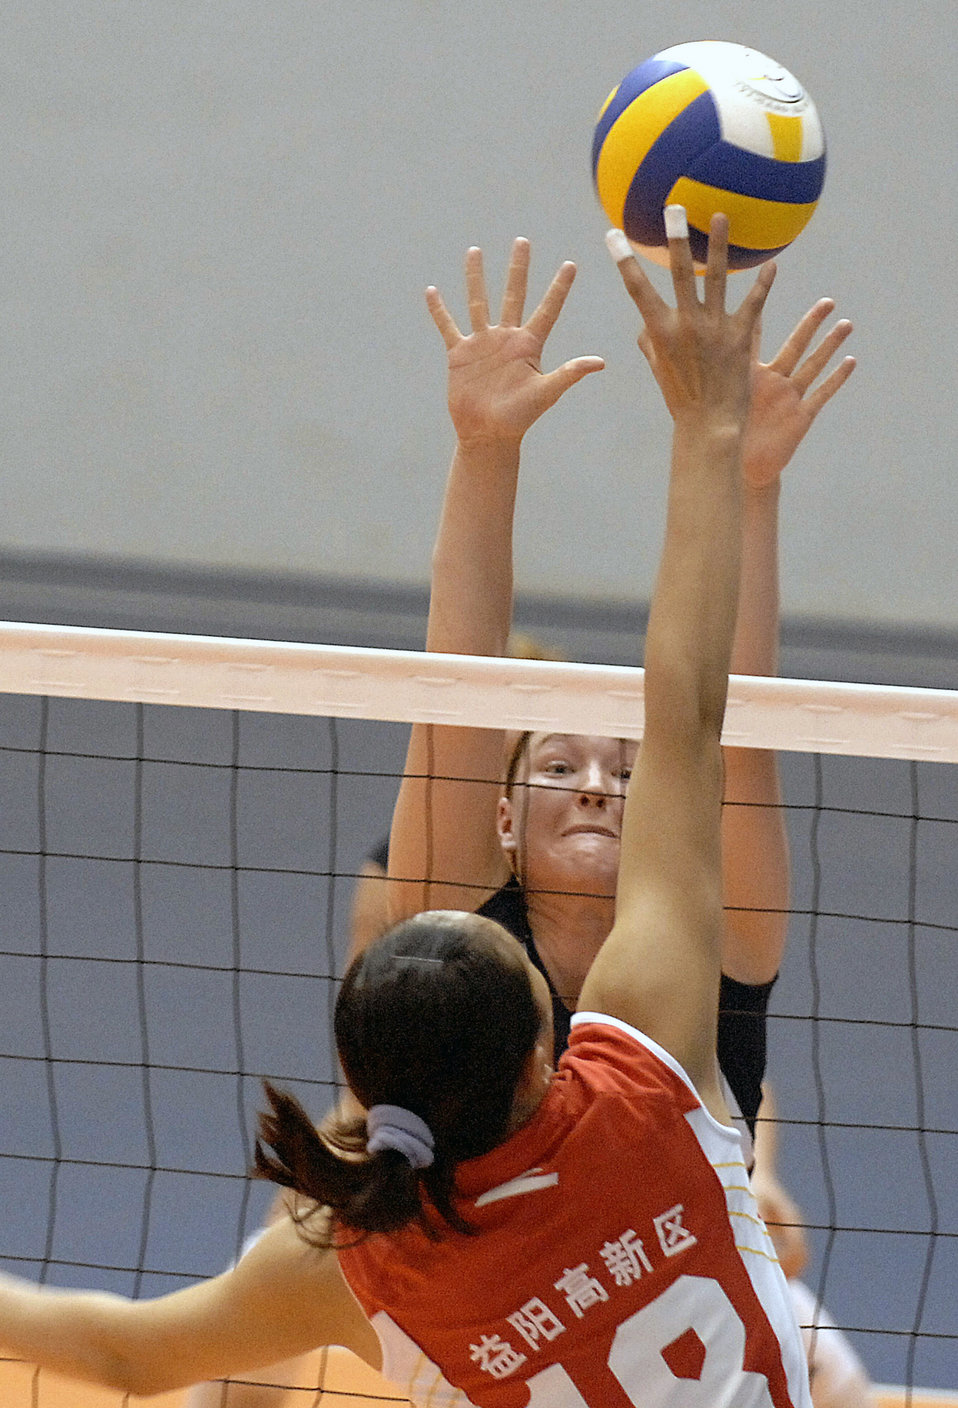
4th CISM World Military Games

Ens. Ashley Kins tries to block a shot by 2nd Lt. Liu Xiaojing of China during the U.S. women's first volleyball game at the Military World Games in Hyderabad, India. The U.S. women fell to the Chinese team in three games, 25-15, 25-11, 25-7. The Conseil Internationale du Sport Militaire's Military World Games event is the largest international military Olympic-style event in the world. In this year's fourth edition of the Games, 103 countries and more than 5,000 athletes are competing Oct. 14 to 21 in boxing, diving, soccer, handball, judo, military pentathlon, parachuting, sailing, shooting, swimming, volleyball and track and field. The purpose of the Military World Games is to promote